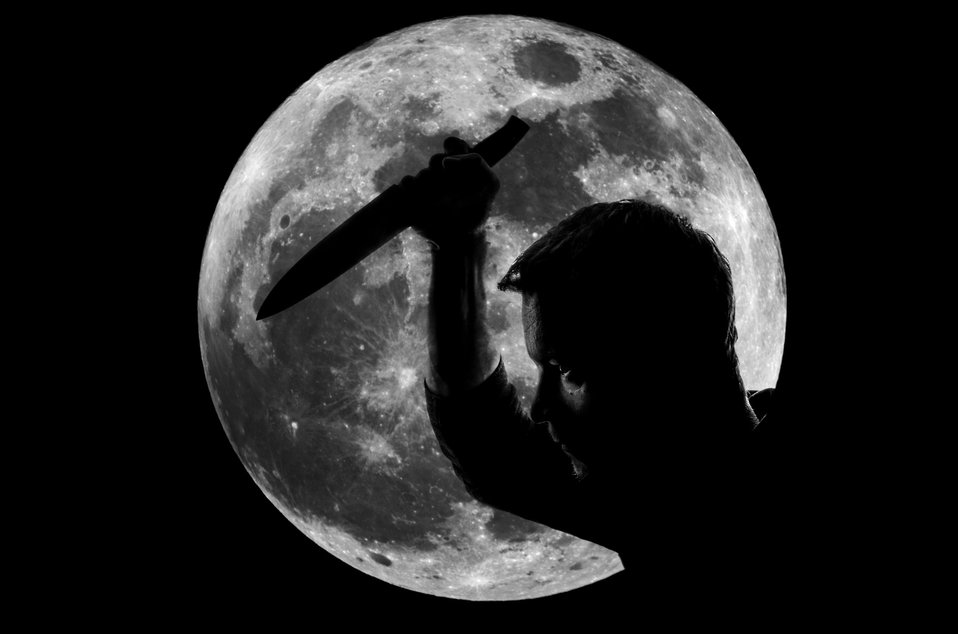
Horror silhouette of a man with a knife on the moon.